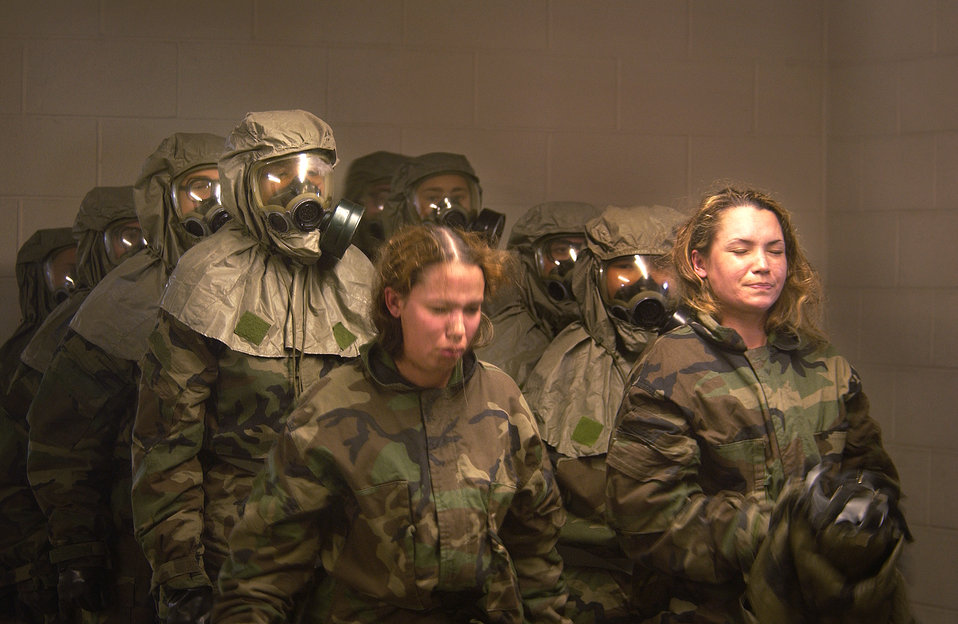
Unmasked

LACKLAND AIR FORCE BASE, Texas -- Basic trainees are asked to remove their gas masks and report to a readines instructor while still inside the gas chamber as part of thier Warrior Week training here. After being exosed to the gas students experience itchy watering eyes, coughing, runny noses and in some extreme cases vomiting. The training during Warrior Week prepares trainees for the possibility of world wide deployment almost immediately upon arrival at their first duty station. The trainees are in their fifth week of training and are one week away from graduation.